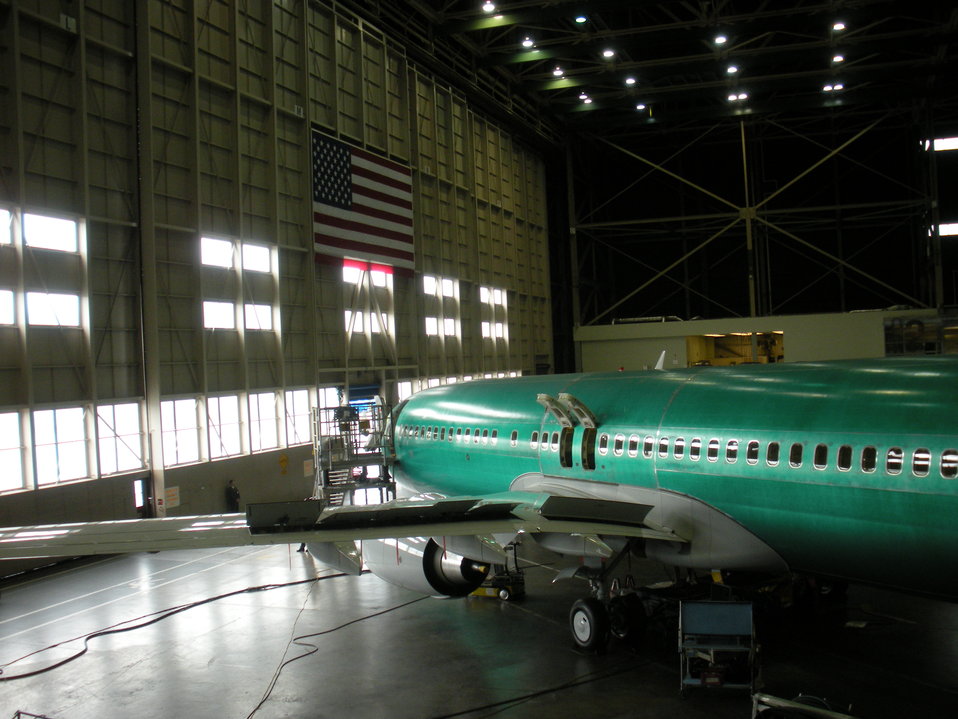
Boeing Plant in Renton, 5/18/2010

Secretary Geithner toured a Boeing 737 plant in Renton, WA on May 18, 2010.